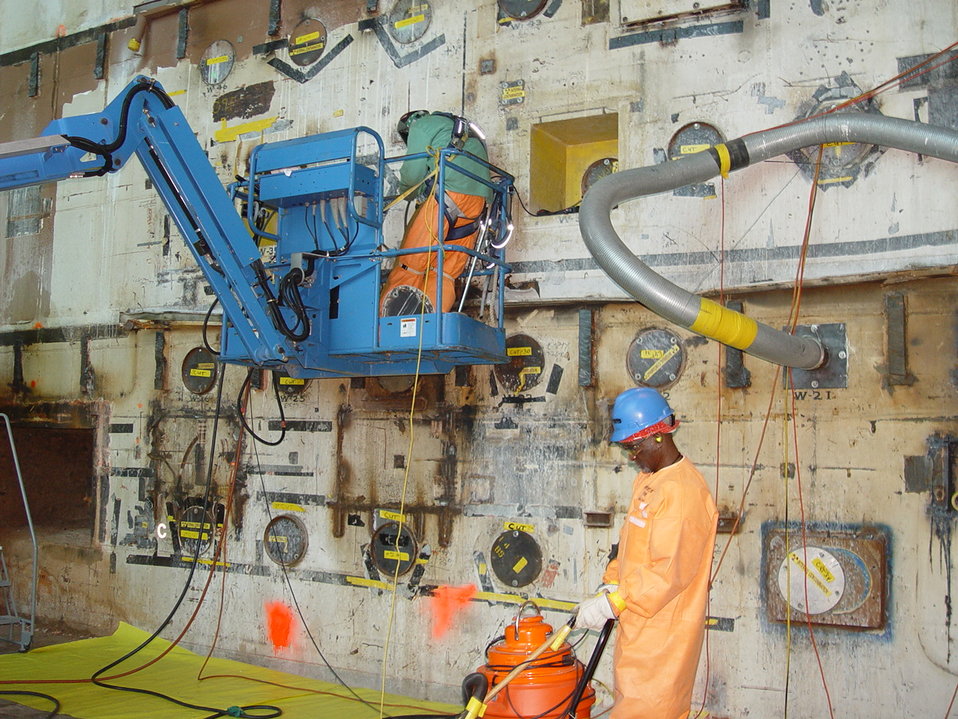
Cutting Experimental Ports from BGRR Bioshield

(2010) – Brookhaven National Laboratory and its contractor, Brookhaven Science Associates (BSA), are on pace to successfully complete three major projects funded by $71 million from the Recovery Act by September 2011.
Recovery Act workers finished work associated with one historic research reactor and are nearly done decommissioning another one. The third project — cleanup of legacy contaminated soil — was completed in 2009.